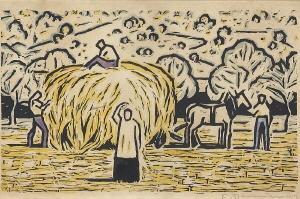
Heuernte